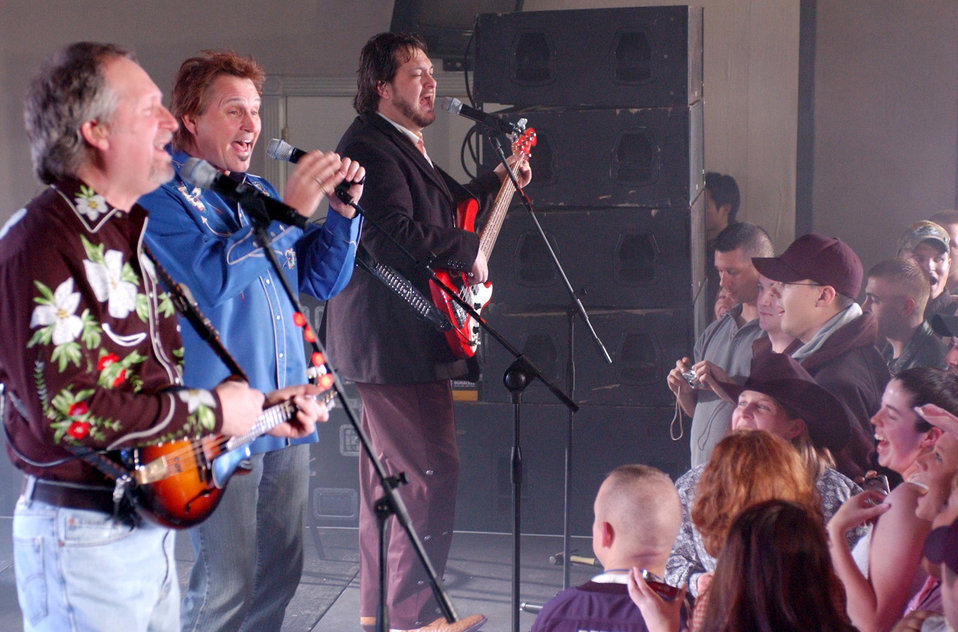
Diamond Rio in Korea

KUNSAN AIR BASE, South Korea (AFPN) -- (From left) Gene Johnson, Marty Roe and Dana Williams of country band Diamond Rio play for 8th Fighter Wing Airmen Feb. 15. Diamond Rio made their first stop here as they sweep through the Pacific playing for servicemembers. The tour is sponsored by the United Services Organization.